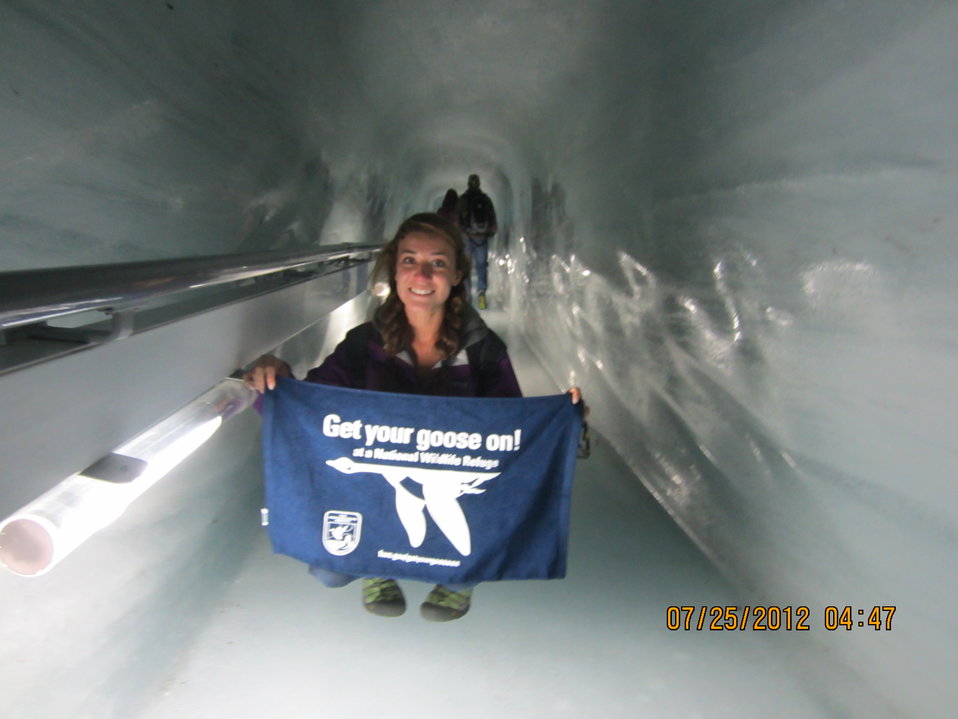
Get Your Goose On!

...in what appears to be an icy labrinth somewhere in western Europe.